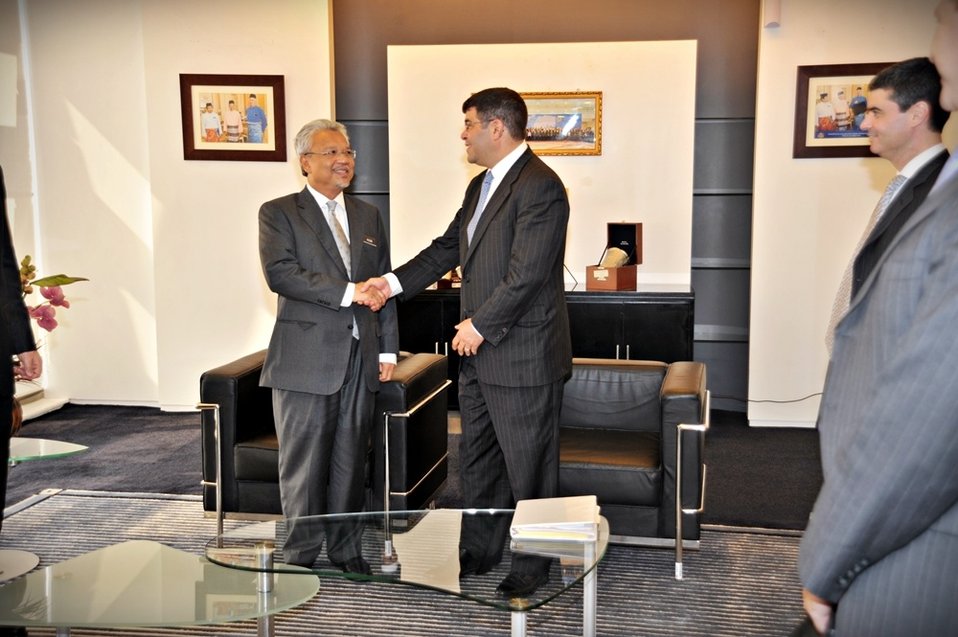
Deputy Secretary Wolin's Trip to the Pacific Rim

Deputy Secretary Neal Wolin held a bilateral meeting with Finance Minister II Dato' Seri Ahmad Husni Hanadzlah in Kuala Lampur, Malaysia on Wednesday, May 18, 2011.